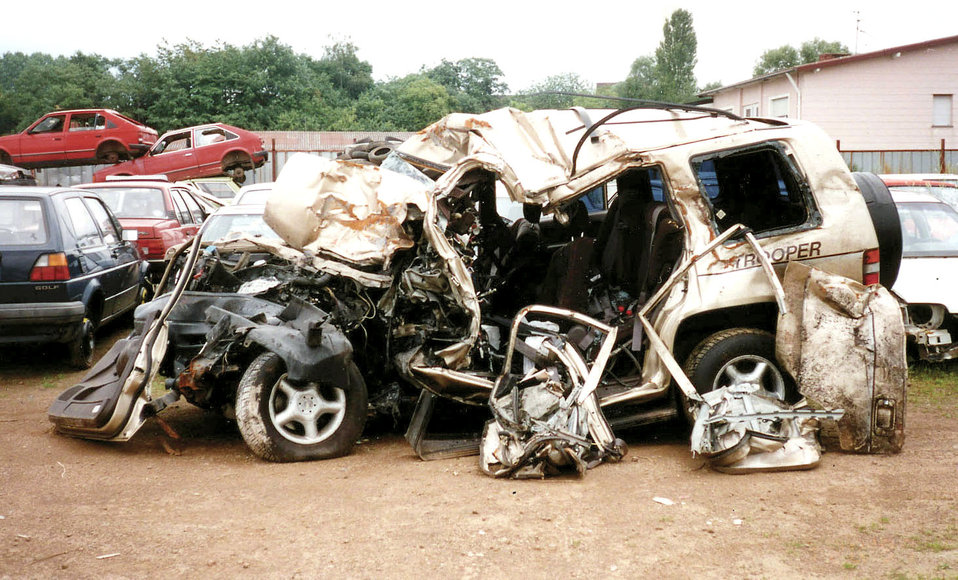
Airman remembers day she lost four friends

GERMANY -- The mangled 1992 Isuzu Trooper that Master Sgt. Theresa Hall was riding in eight years ago sits at a junk yard shortly after an accident that killed the other four passengers. Sergeant Hall was the only survivor of the head-on collision with a drunk driver.